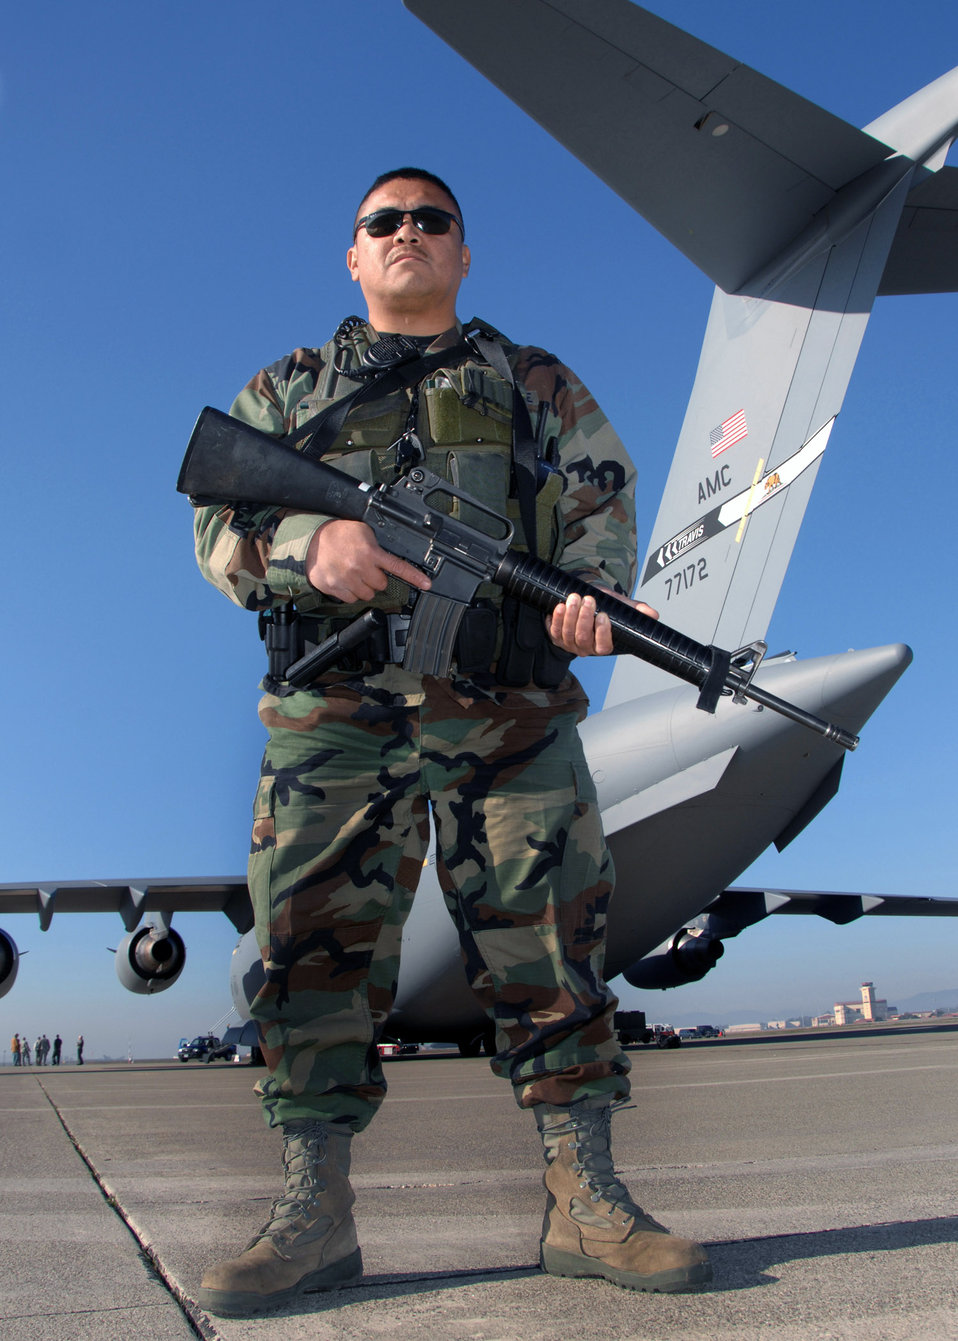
Standing guard

During a major accident response exercise Jan. 13 at Travis Air Force Base, Calif., Tech. Sgt. Efren Rugnao scans the flight line for any unauthorized people close to the secured perimeter of a C-17 Globemaster III.